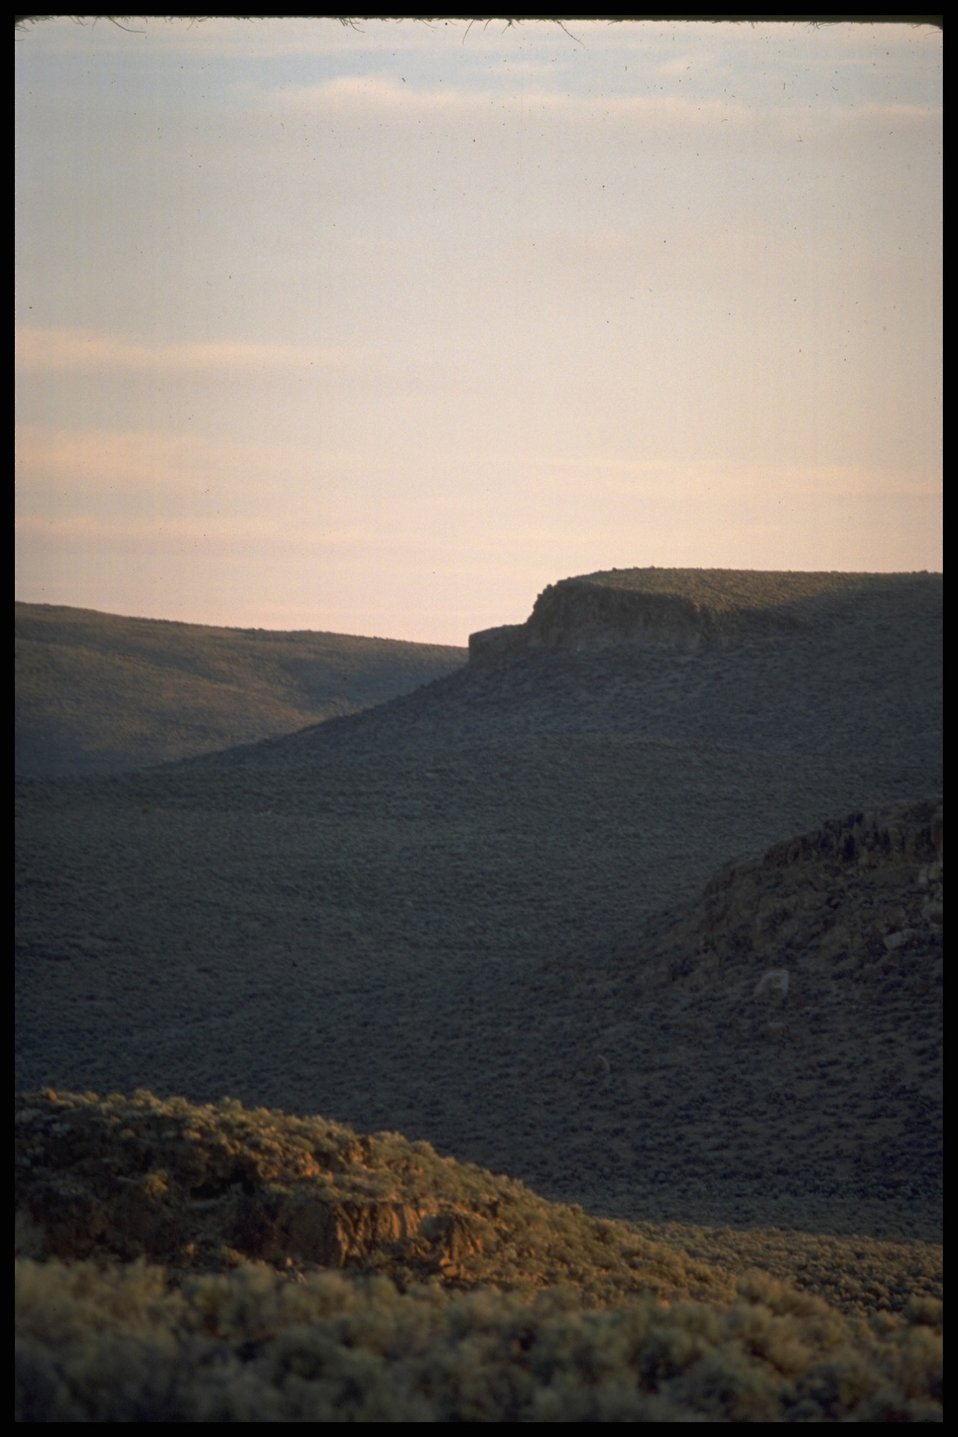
Scenic view of Desert, Lakeview District.